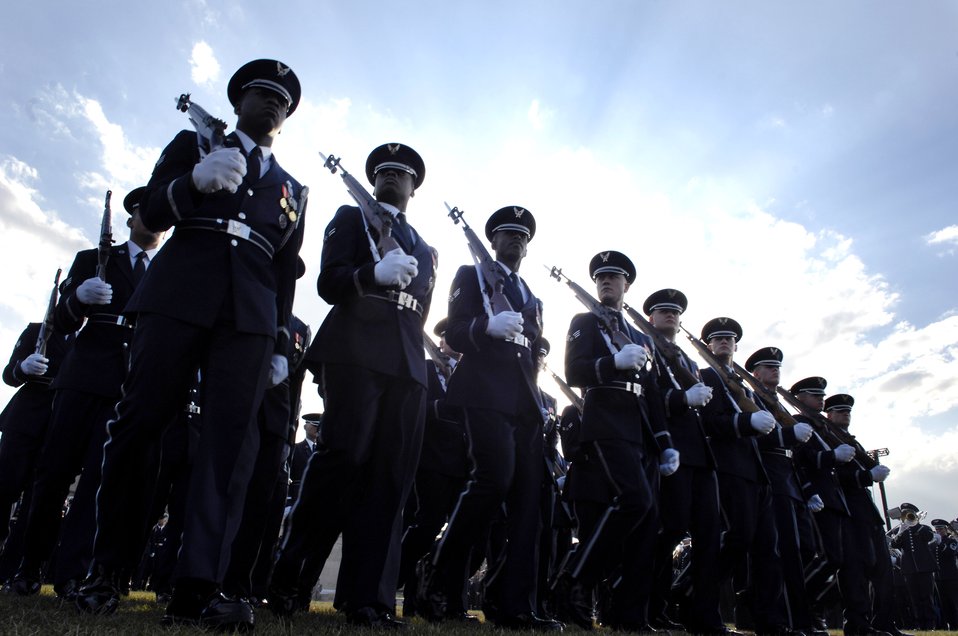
March-in-review

Airmen march-in-review during the farewell ceremony for Secretary of Defense Donald H. Rumsfeld at the Pentagon Dec. 15.